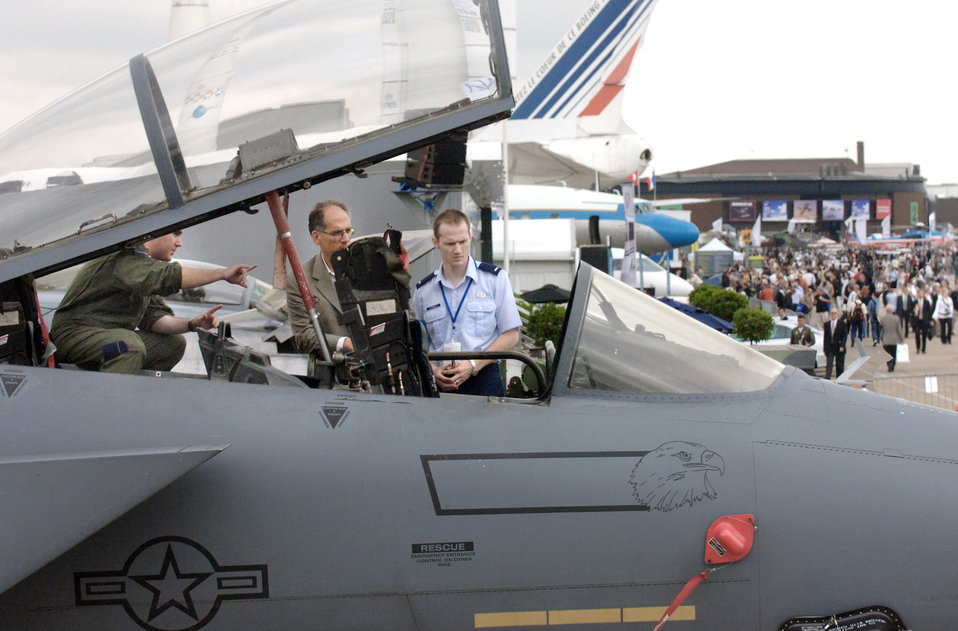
Airmen, aircraft on display at Paris Air Show

Capt. Matt Cisar gives a tour of an F-15E Strike Eagle during the Paris Air Show 2009 June 18 at Le Bourget, France. The aircraft and crew are assigned to the 492nd Fighter Squadron from Royal Air Force Lakenheath, England. Captain Cisar is an F-15E pilot.